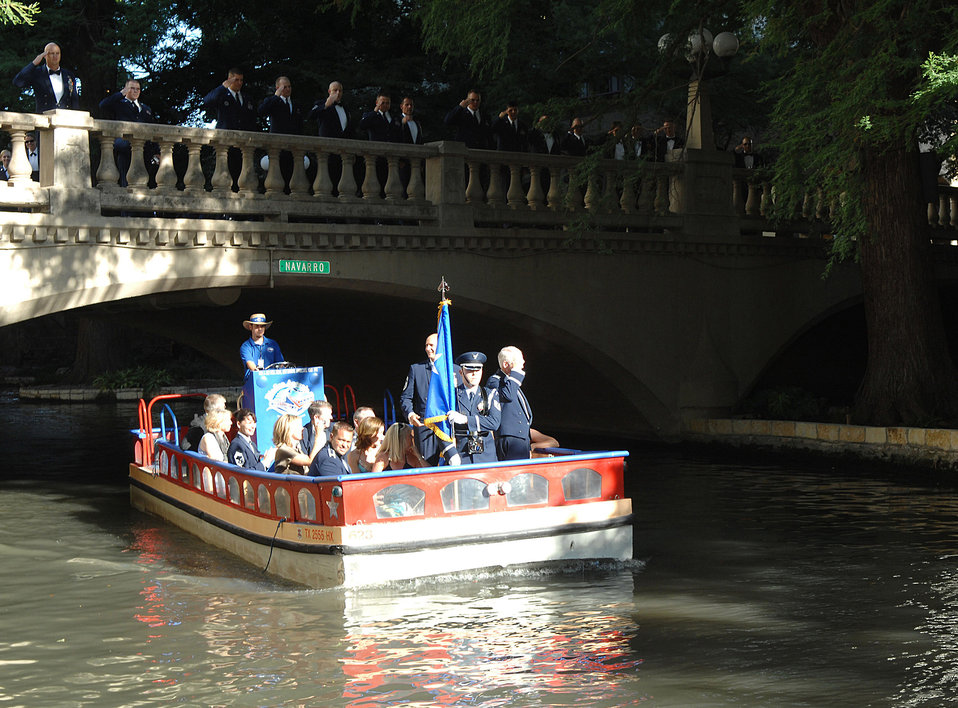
Enlisted members give highest honor to AETC commander

Gen. William R. Looney III and members of his party arrive for the Order of the Sword ceremony May 30 at the Westin Riverwalk Hotel in San Antonio. General Looney is the commander of Air Education and Training Command.